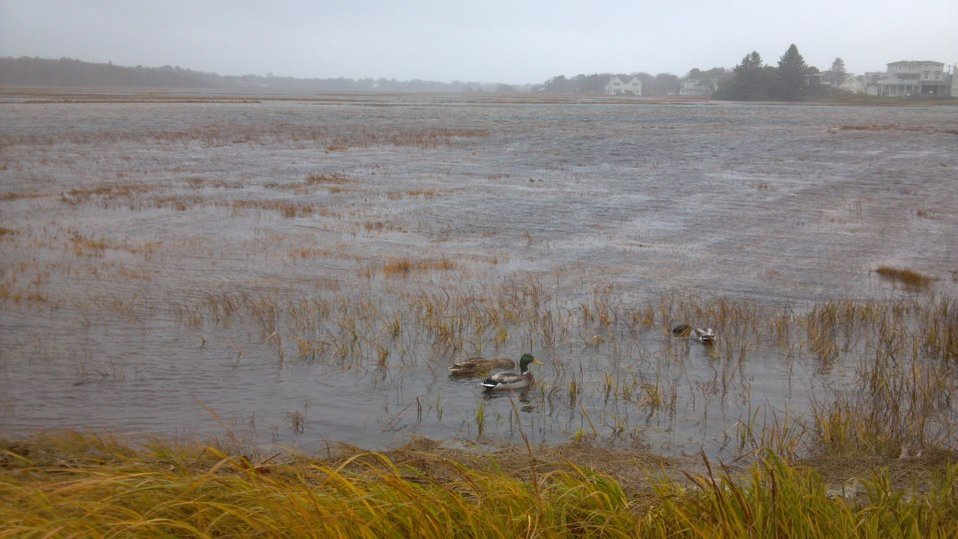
Rachel Carson National Wildlife Refuge: October 29,2012 (ME)

As Hurricane Sandy approaches landfall, these mallards are seeking refuge on the already flooded marshes.